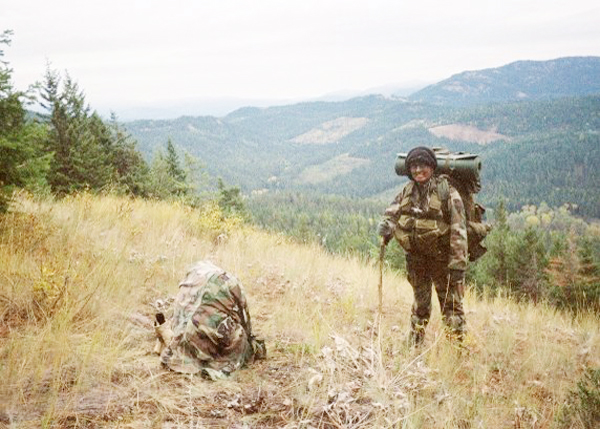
Korean linguist

As part of her three-and-a-half year training to become an analysis operator on an EC-130H Compass Call aircraft, Senior Airman Heather Hagerman attended survival, evasion, resistance and escape training at Fairchild Air Force Base, Wash. A Korean linguist, Airman Hagerman is assigned to the 43rd Electronic Combat Squadron at Davis-Monthan Air Force Base, Ariz.